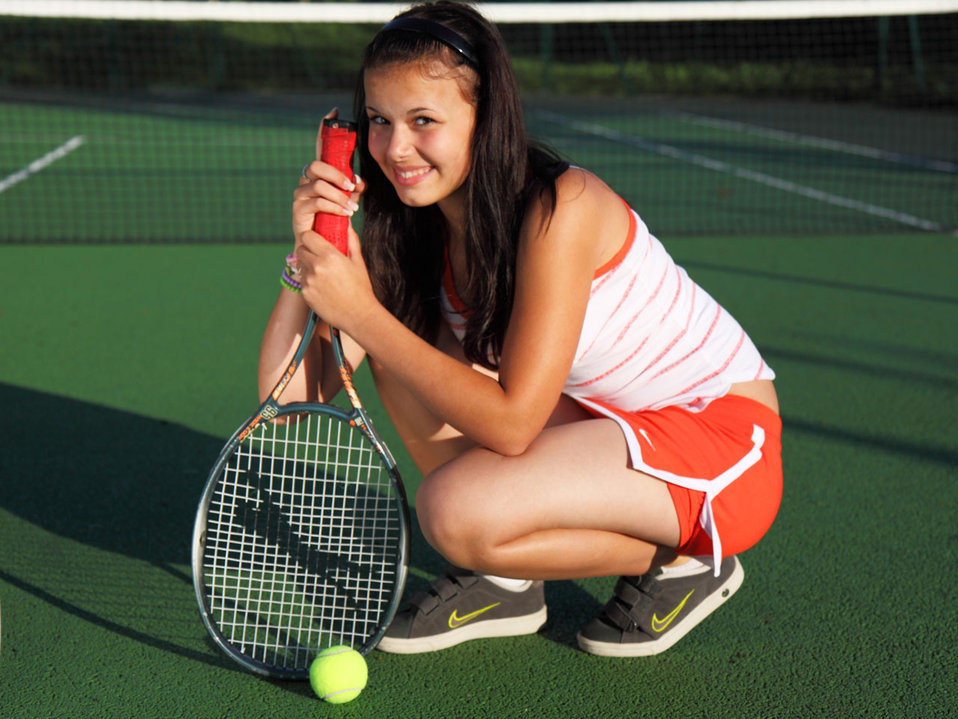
Tennis player

Cute tennis player on tennis court.